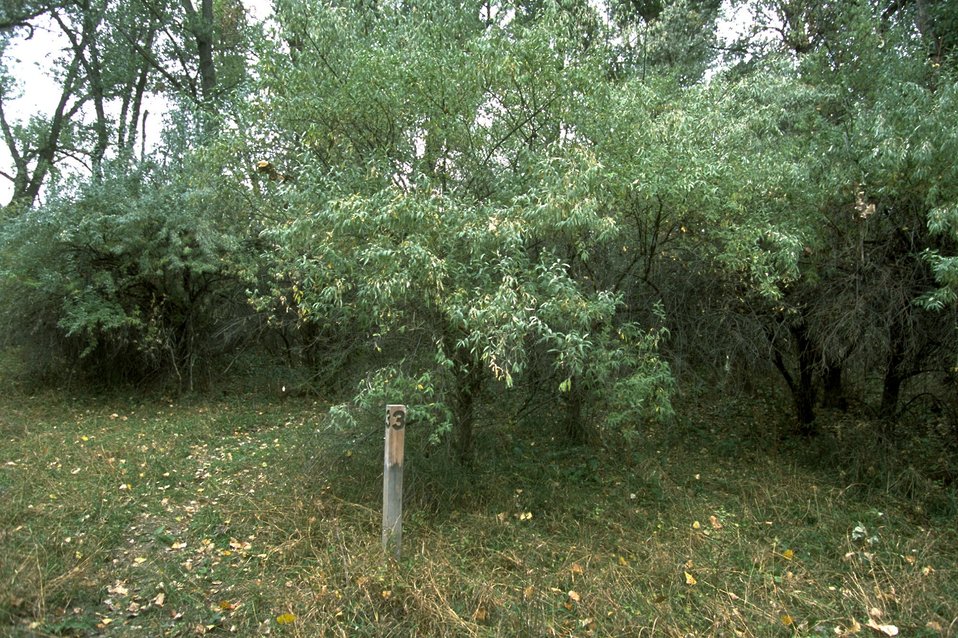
Trail marker on Howrey Island Nature Trail by the Yellowstone River